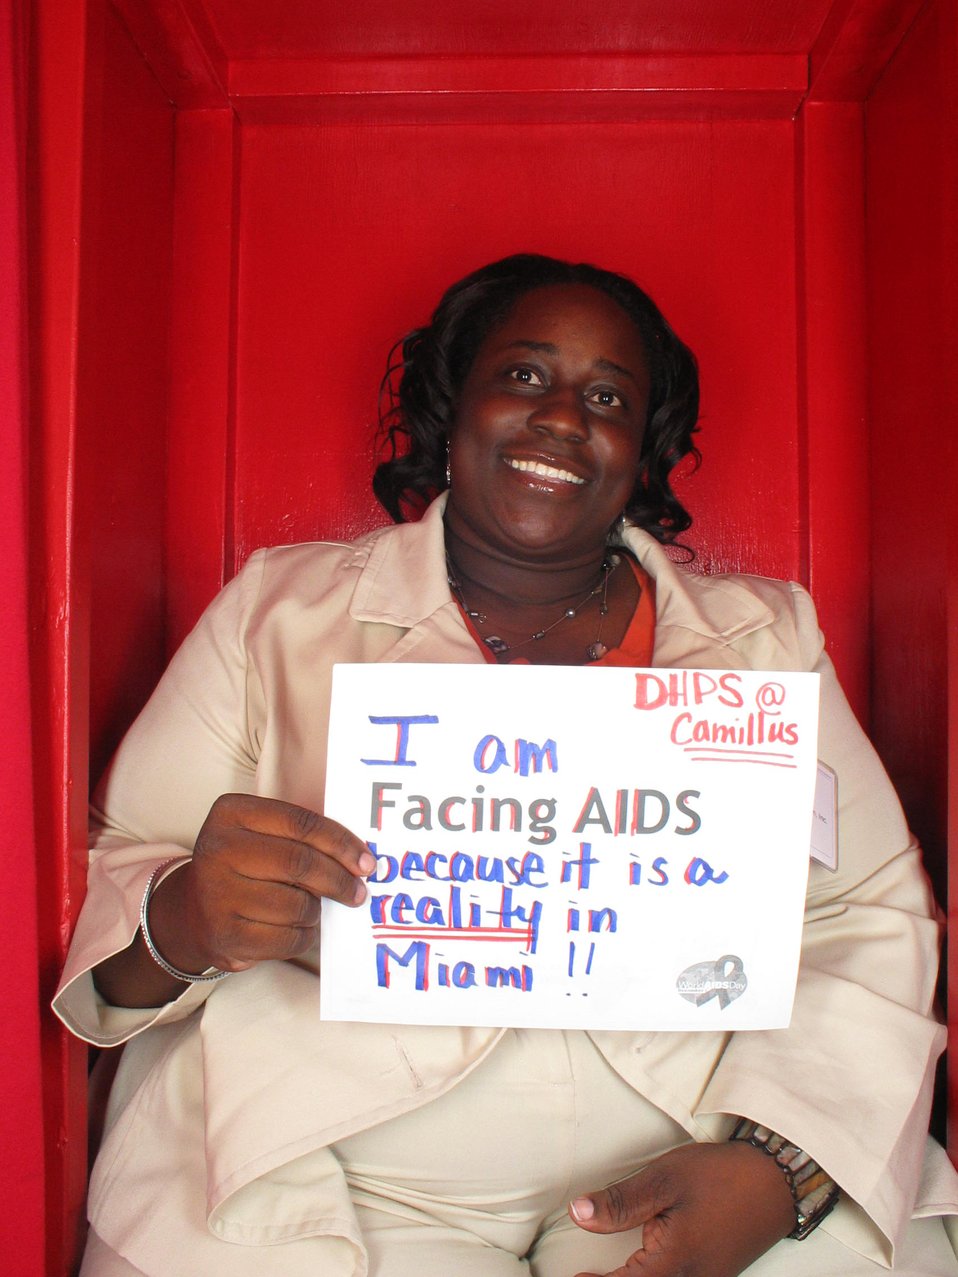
I am Facing AIDS because it is a reality in Miami!!